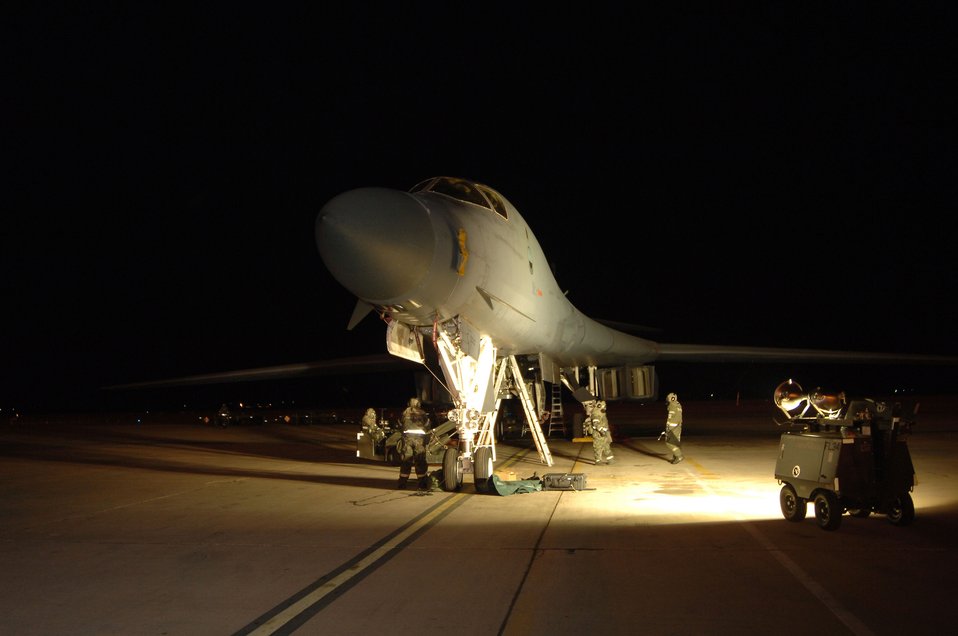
B-1s at the ready

DYESS AIR FORCE BASE, Texas (AFPN) -- Crew chiefs prepare a B-1B Lancer for a mission during an operational readiness exercise. The Airmen are with the 7th Maintenance Operations Squadron and the 9th Bomb Squadron here. The exercise prepares Airmen for the upcoming operational readiness inspection and wartime deployments.